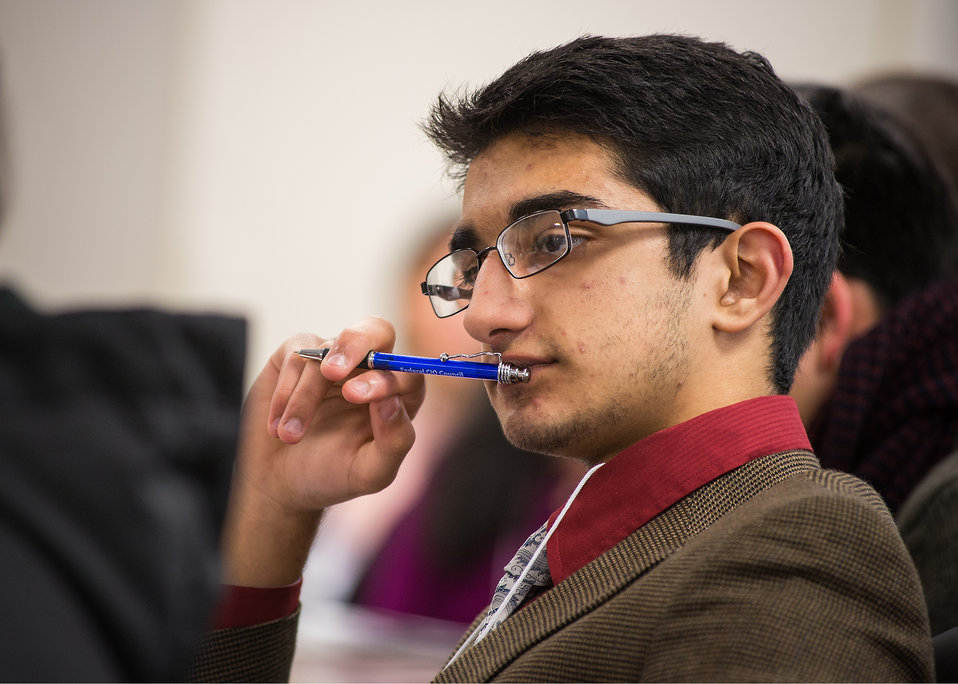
Salman Guliwala, a student from Thomas Jefferson High School of Science and Technology in Alexandria, VA. listens to a speaker during the U.S. Department of Agriculture (USDA), Office of the Chief Information Officer (OCIO) IT Job Shadow Day, Tuesday, Mar. 25, 2014. The OCIO IT Job Shadow Day hosts students from local high schools in the Washington, D.C. area annually with IT professionals and agricultural specialists from a variety of mission areas at USDA.